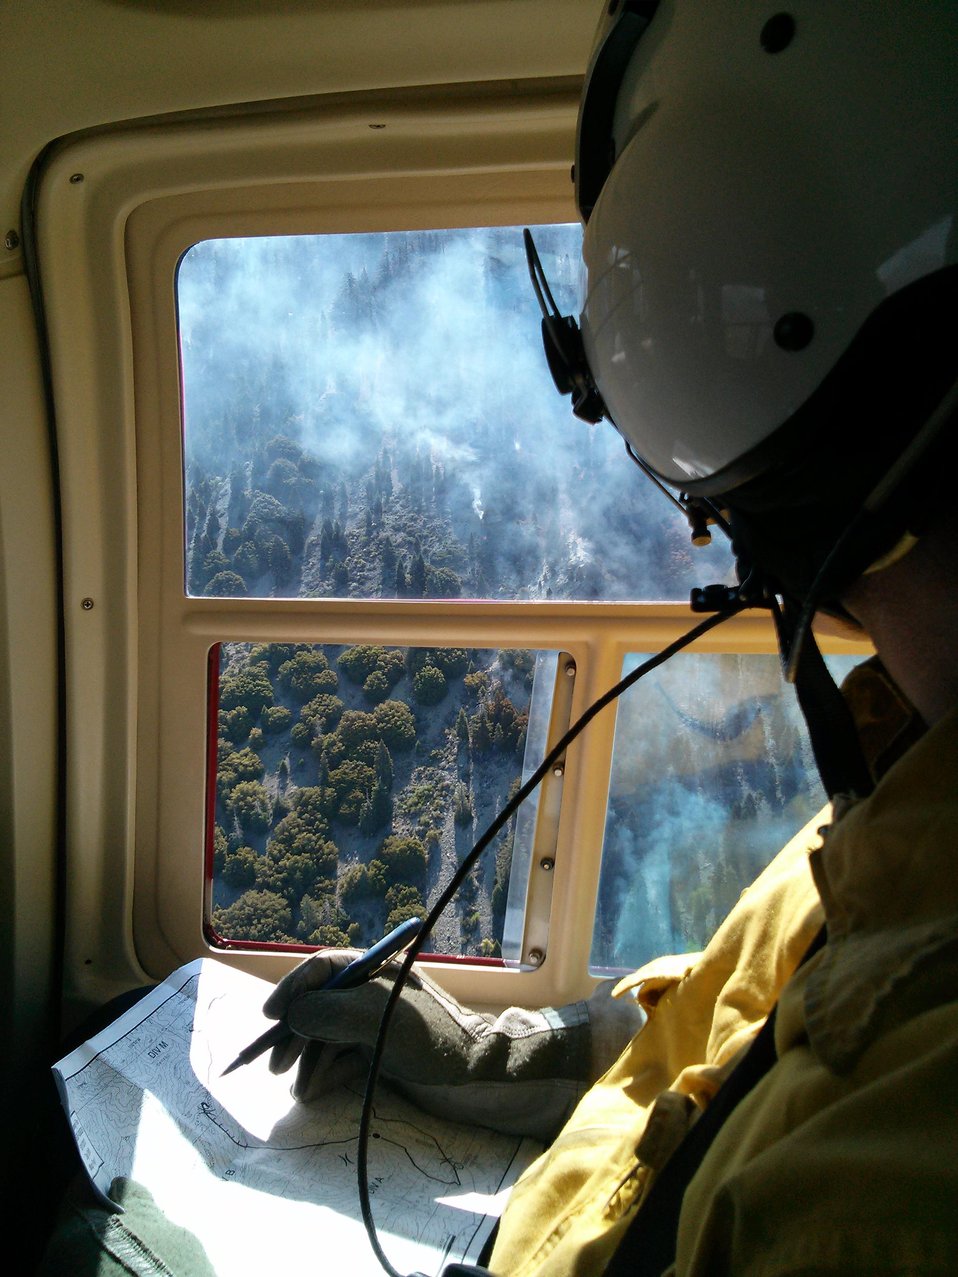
A U.S. Forest Service employee maps the Hathaway Fire from a helicopter. The Hathaway Fire is east of Hathaway Canyon on the northern portion of the Morongo Indian Reservation in the San Gorgonio Wilderness near Palm Springs, CA began on started Jun. 9, 2013 and the cause is still to be determined. The fire has burned approximately 3, 825 acres and is 95% contained as of Jun. 25, 2013.